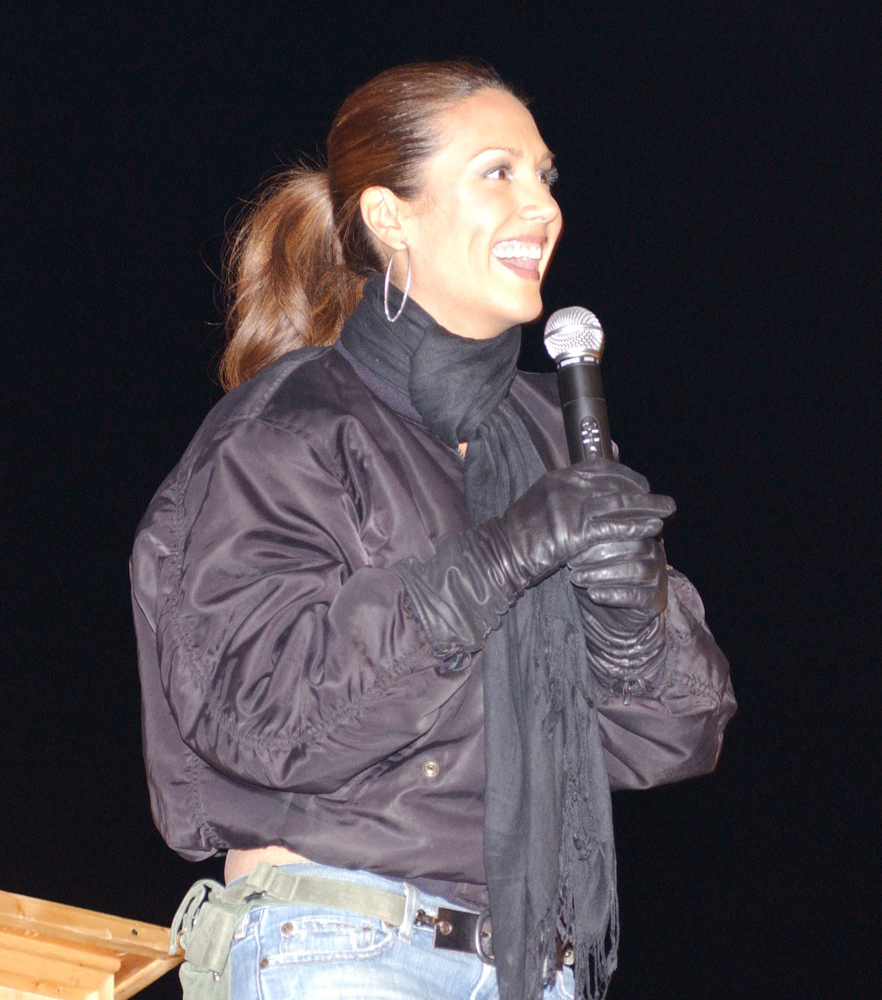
Balad Airmen welcome USO tour

BALAD AIR BASE, Iraq -- Leeann Tweeden talks to the more than 2,000 servicemembers attending the Chairman's United Service Organizations Holiday Tour here Dec. 14.